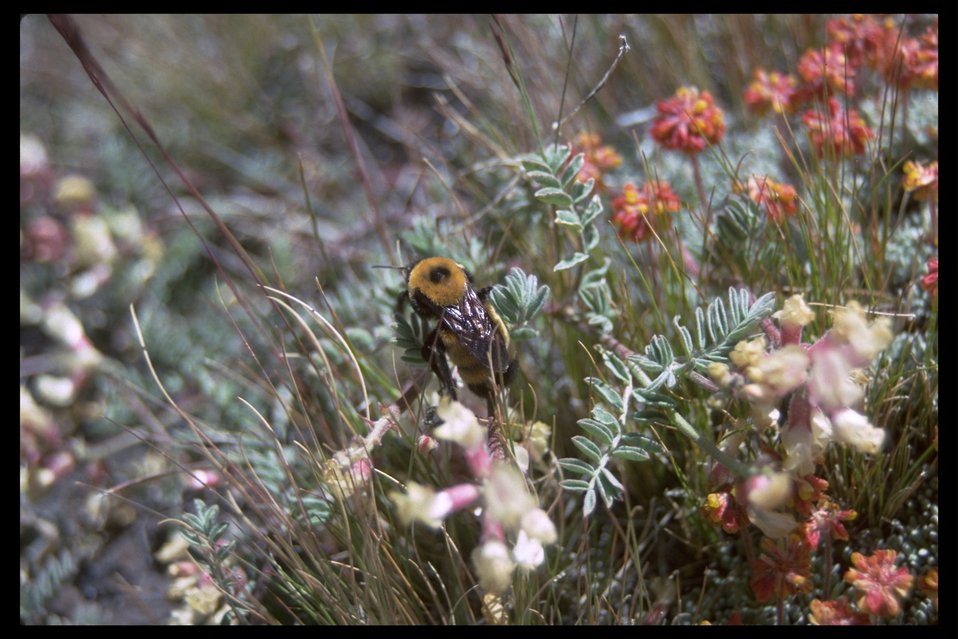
Bee gathering pollen on flowers in the high Steens WSA. (WSA 2-85F)